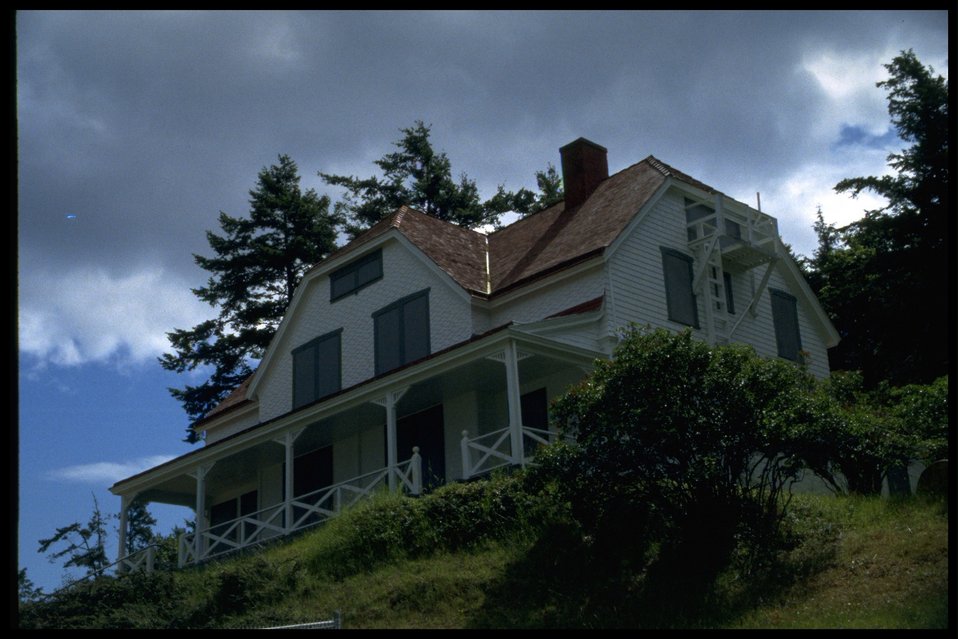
Living quarters at Turn Point. One in a series of ten shots of the living quarters.